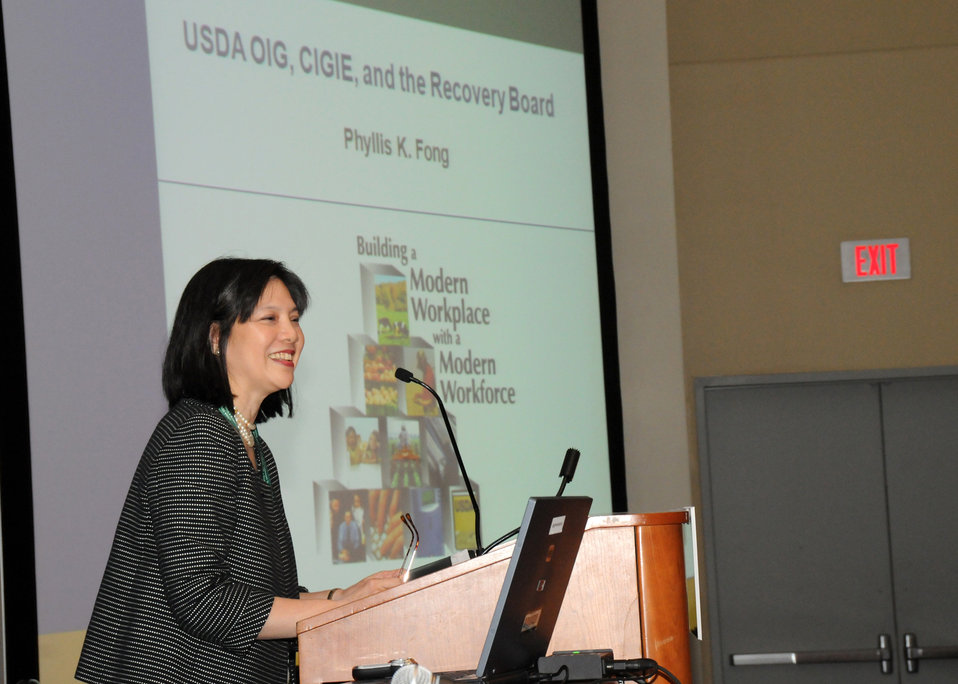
U.S. Department of Agriculture Inspector General Phyllis Fong speaks to participants at the Financial Management Training conference held in Washington, D.C., on Thursday, May 27, 2010. Inspector General Fong discussed the scope of the Office of Inspector General (OIG), the Council of the Inspectors General on Integrity and Efficiency (CIGIE) and the activities of the Recovery Accountability and Transparency Board. USDA photo 10di1373-105.